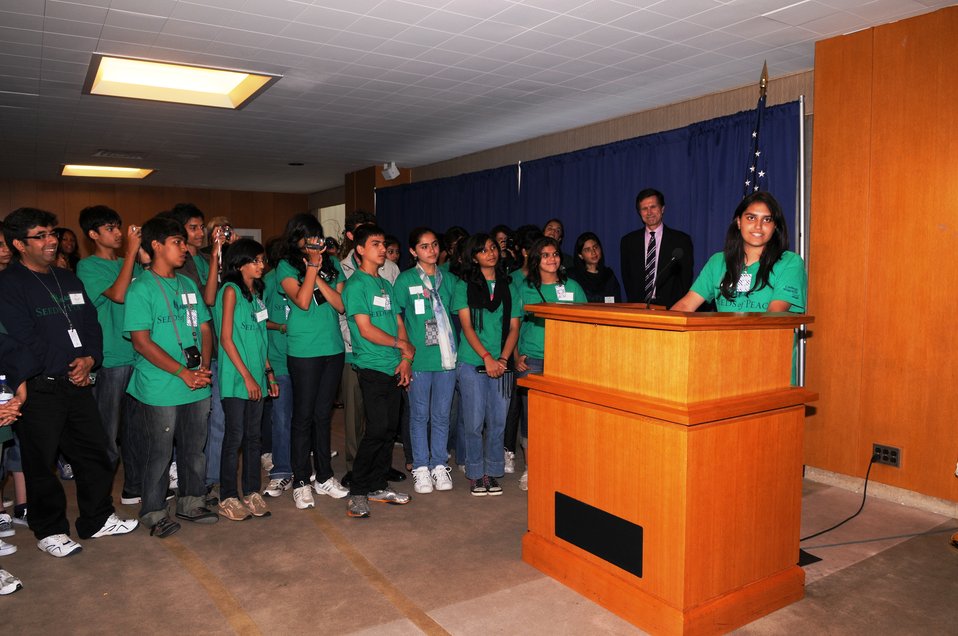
A South Asian Participant in the Seeds of Peace Program Delivers Remarks

A South Asian Seeds of Peace participant delivers remark at a reception at the U.S. Department of State in Washington, D.C., on July 14, 2010.